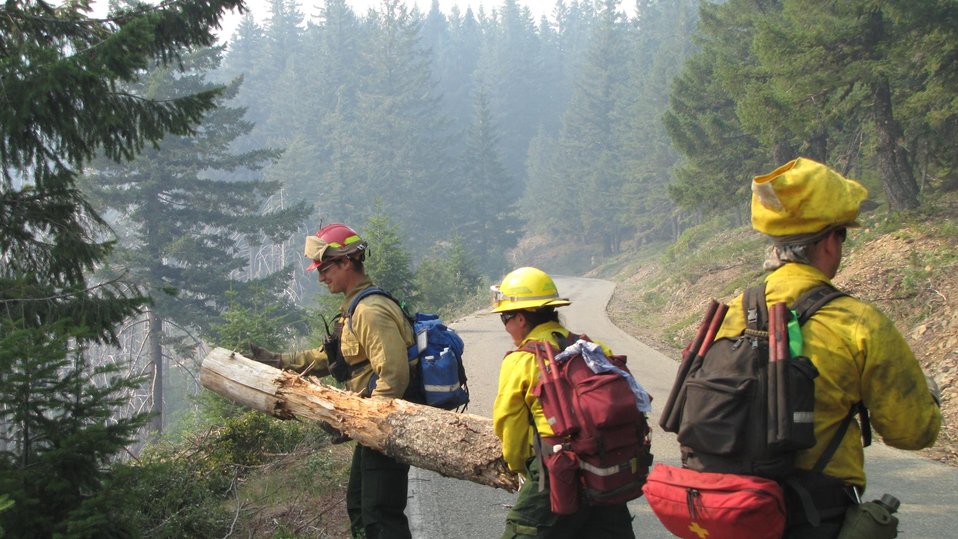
Fire crew works to clear area to prevent spread of the Big Windy Complex Fires. The Big Windy Complex Fires consists of three fires: The Big Windy Fire, Calvert Peak Fire, and Jenny Fire (formerly the Windy 16 Fire) near Grants Pass, OR. The fires began on Jul. 26, 2013 by lighting have consumed approximately 7, 499 acres.